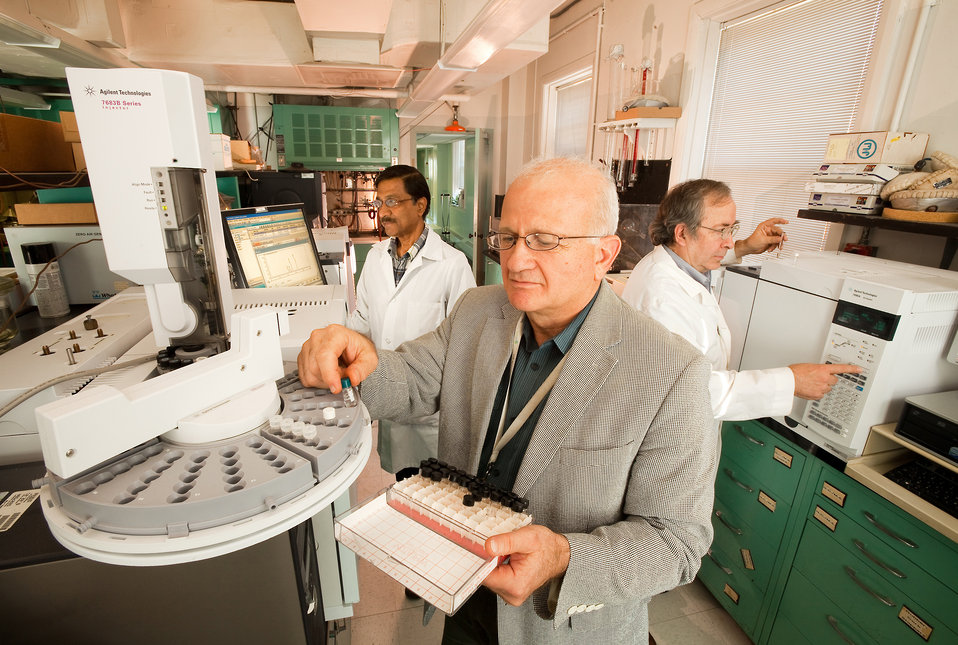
U.S. Department of Agriculture (USDA) Agriculture Research Service (ARS) scientists at Beltsville, MD analyze reaction products to evaluate purities of synthetic lures for brown marmorated stink bug on Oct. 10, 2012.(L to R chemists Shyam Shirali, Ashot Khrimian, and Filadelfo Guzman).